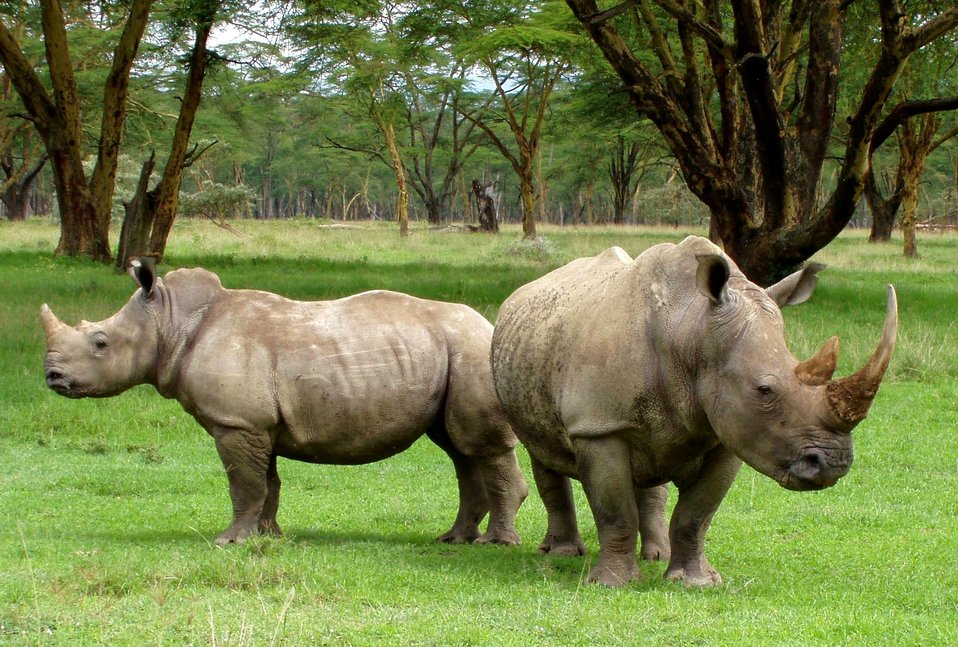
White rhinos

Nakuru National Park, Kenya